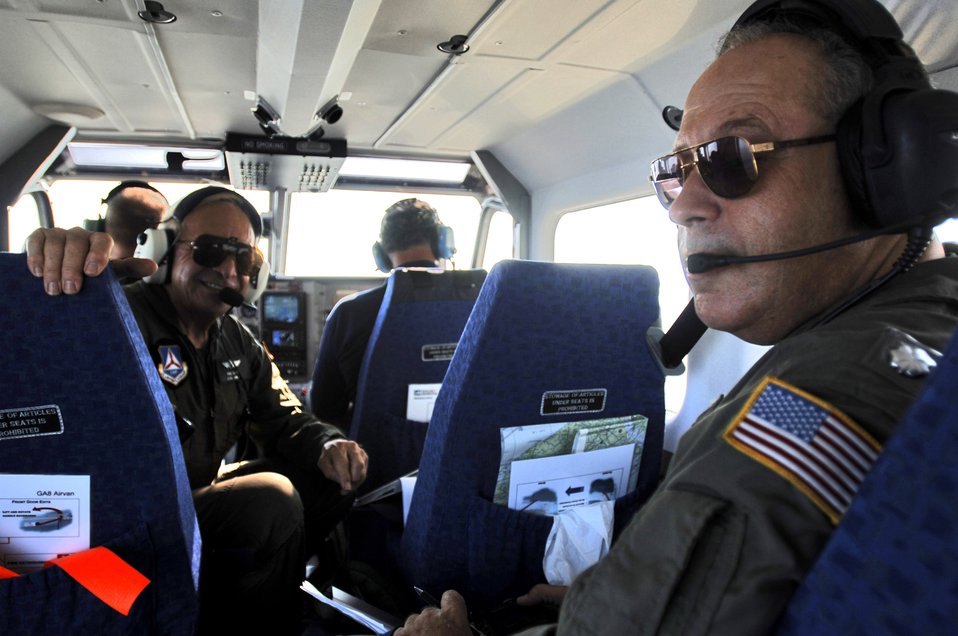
Civil Air Patrol responds

OVER SABINE LAKE, Texas -- Lt. Cols. Paul Salos (left) and C.J. Faas (right), aid an observer/photographer Sept. 26 in logging altitude, direction of camera, latitude and longitude, and photo frame number during a photo reconnaissance flight. The colonels are pilots with the Civil Air Patrol.